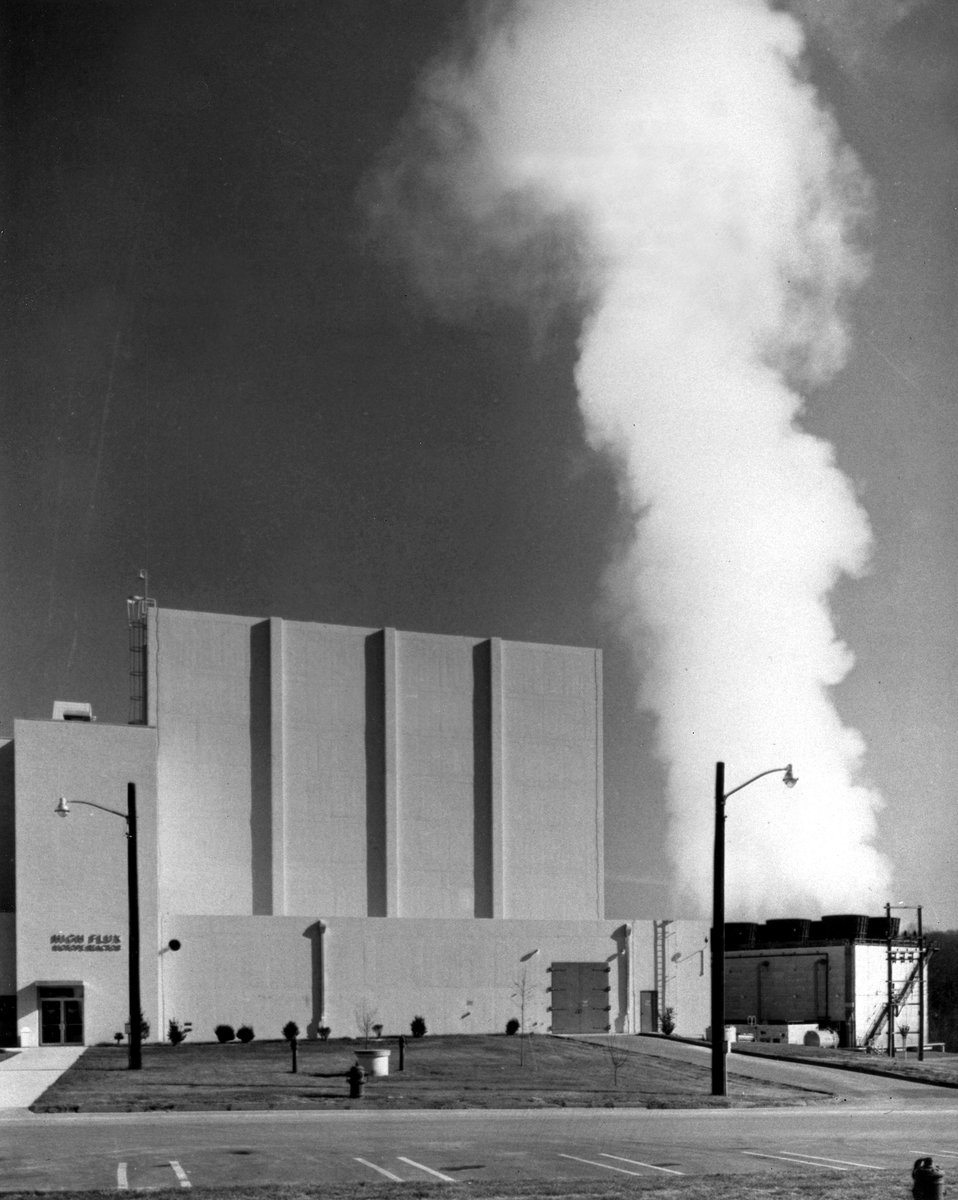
Steam rises skyward from cooling towers which service the High Flux Isotope Reactor located in the adjacent building. c. 1968